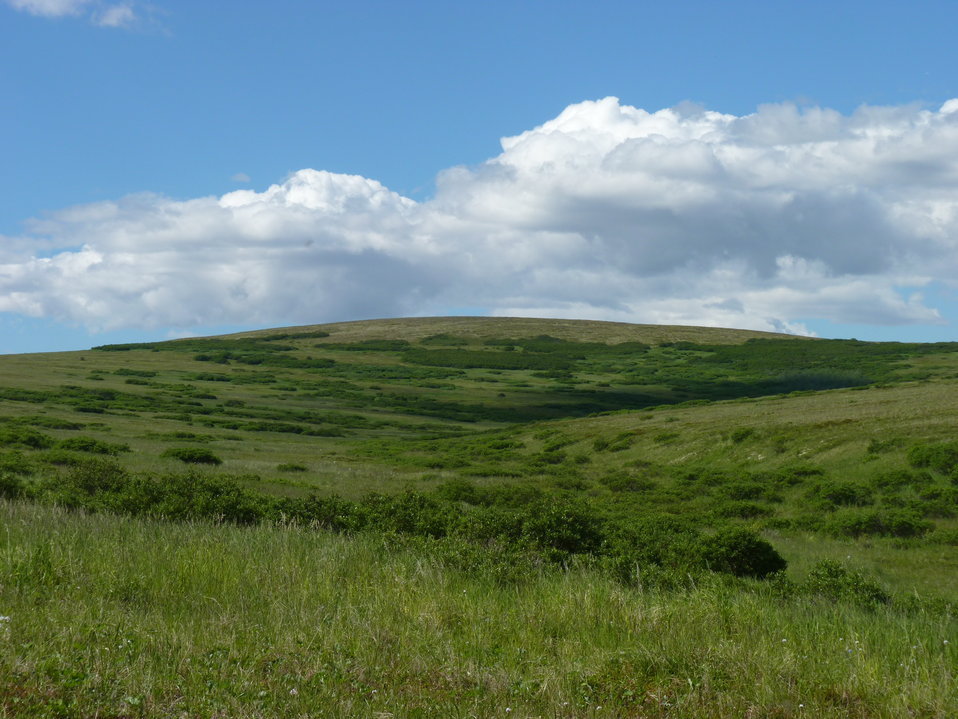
Andreafsky Wilderness, Yukon Delta National Wildlife Refuge